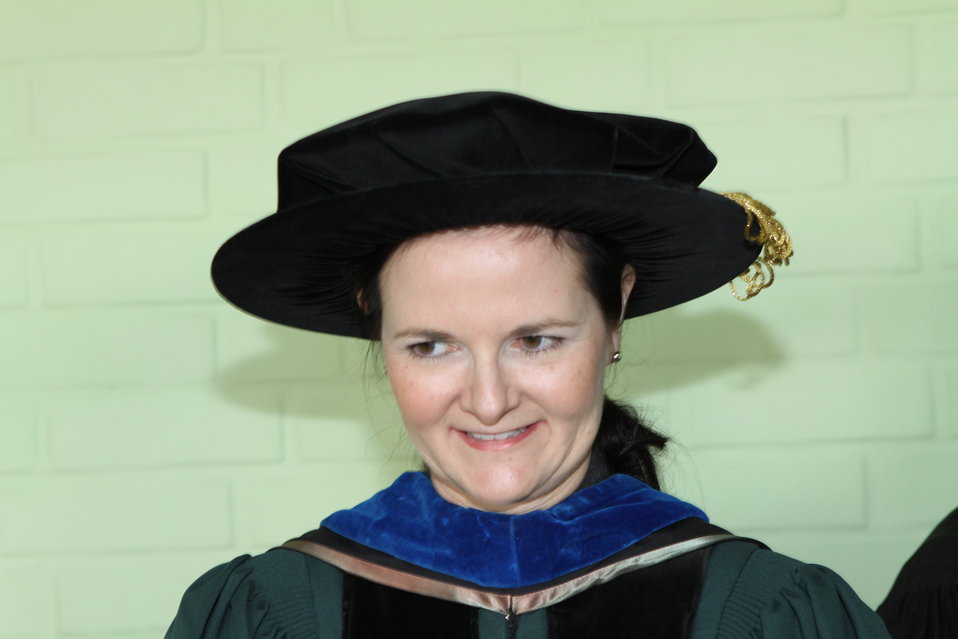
100526 AUAF Graduation 072